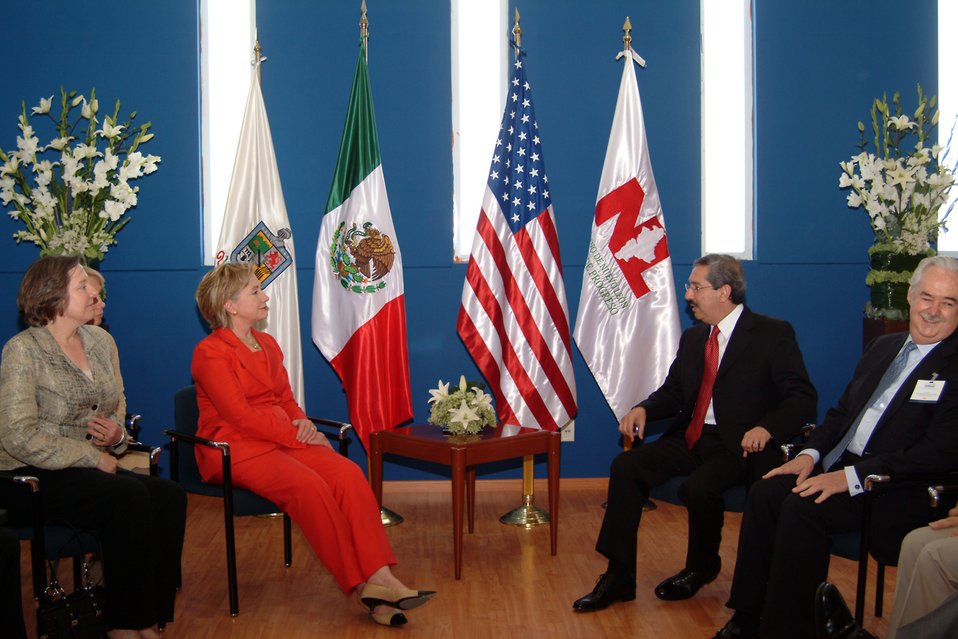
Secretary Clinton at TecMilenio University

U.S. Secretary of State Hillary Rodham Clinton at TecMilenio University in Monterrey, Mexico March 26, 2009.